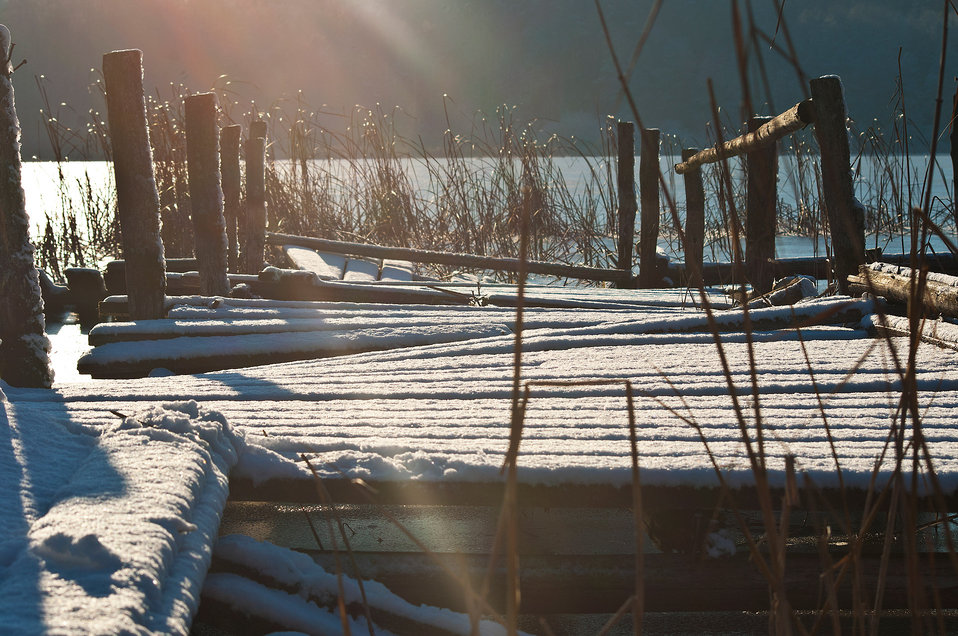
Bridge on the lake

Broken bridge covered with snow.